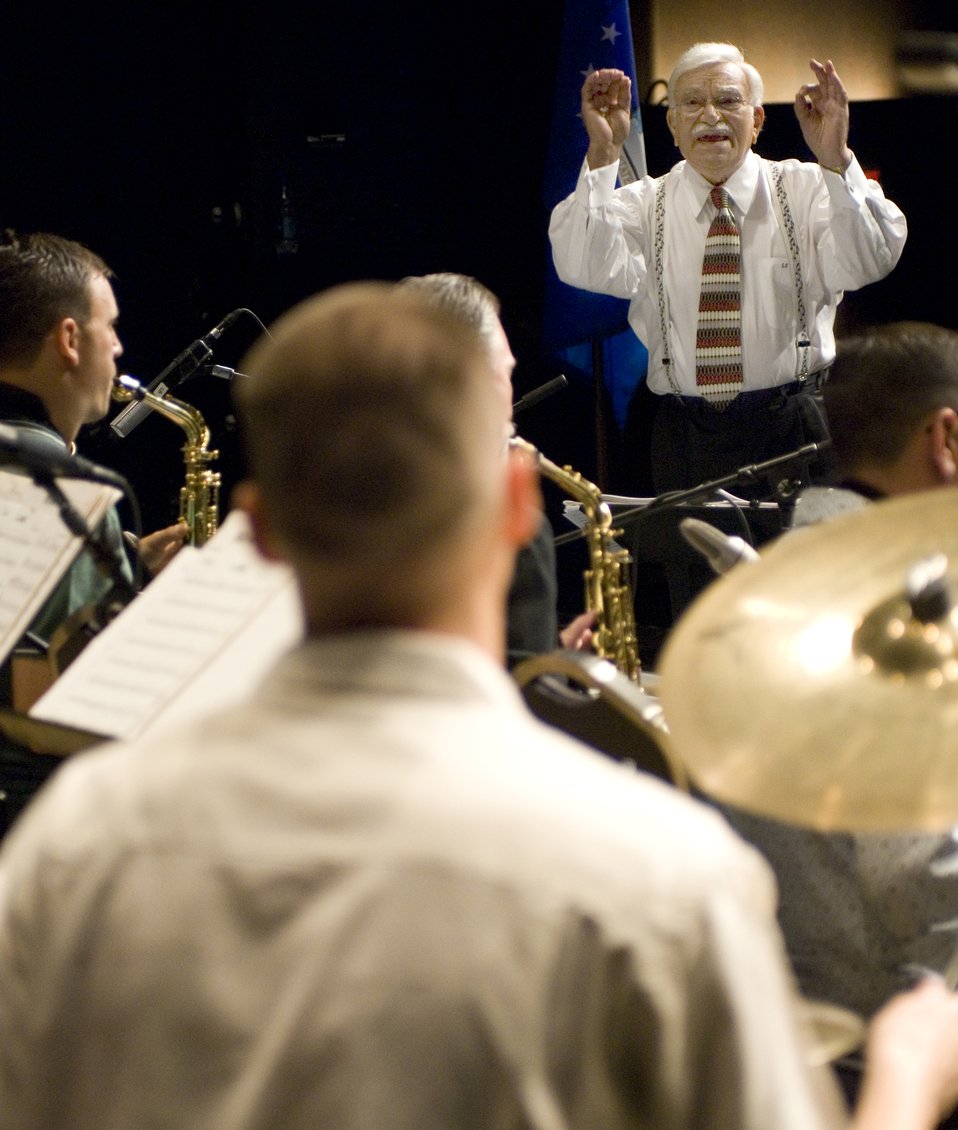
Academy band wows crowd with help from old friend

Bandmaster Sammy Nestico rehearses with The Falconaires from the U.S. Air Force Academy Band at the Lila Cockrell Theatre in San Antonio on July 22.